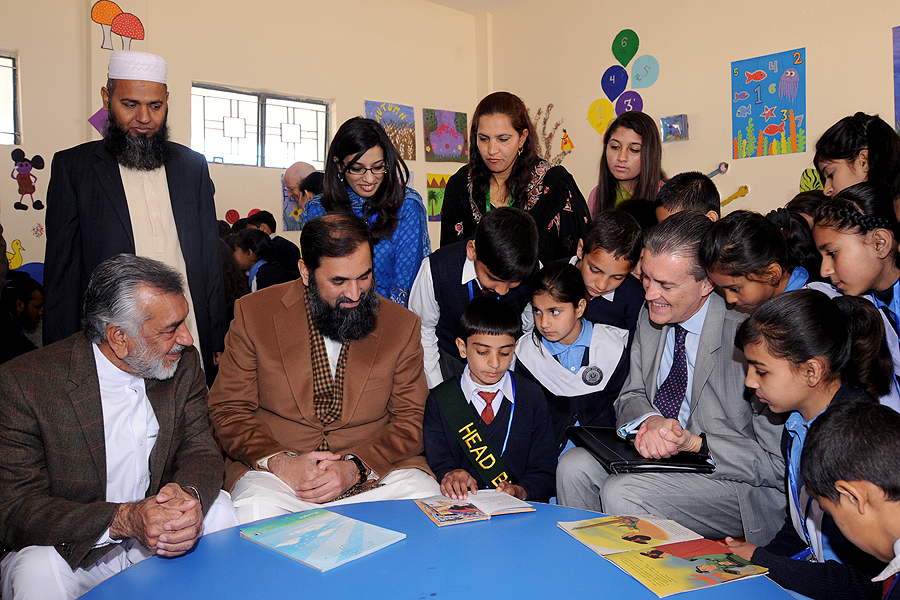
United States and Pakistan Launch the Pakistan Reading Project